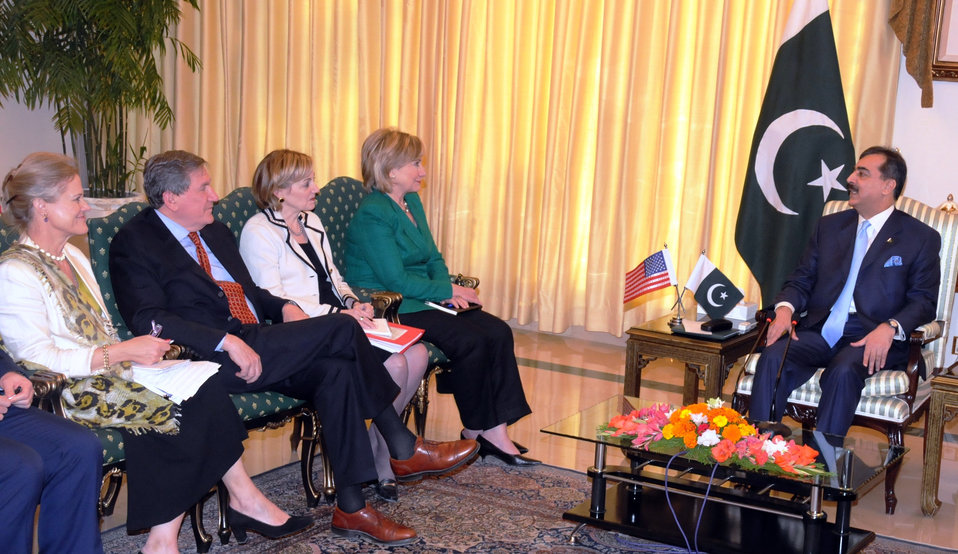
Secretary Clinton Meets With Pakistani Prime Minister

U.S. Secretary of State Hillary Rodham Clinton meets with Pakistani Prime Minister Yousuf Raza Gilani at the Prime Minister's residence in Islamabad, Pakistan October 28, 2009. Seated from left to right are Senior Coordinator for Economic and Development Assistance Robin Raphael, U.S. Special Envoy Richard Holbrooke, and U.S. Ambassador to Pakistan Anne W. Patterson.